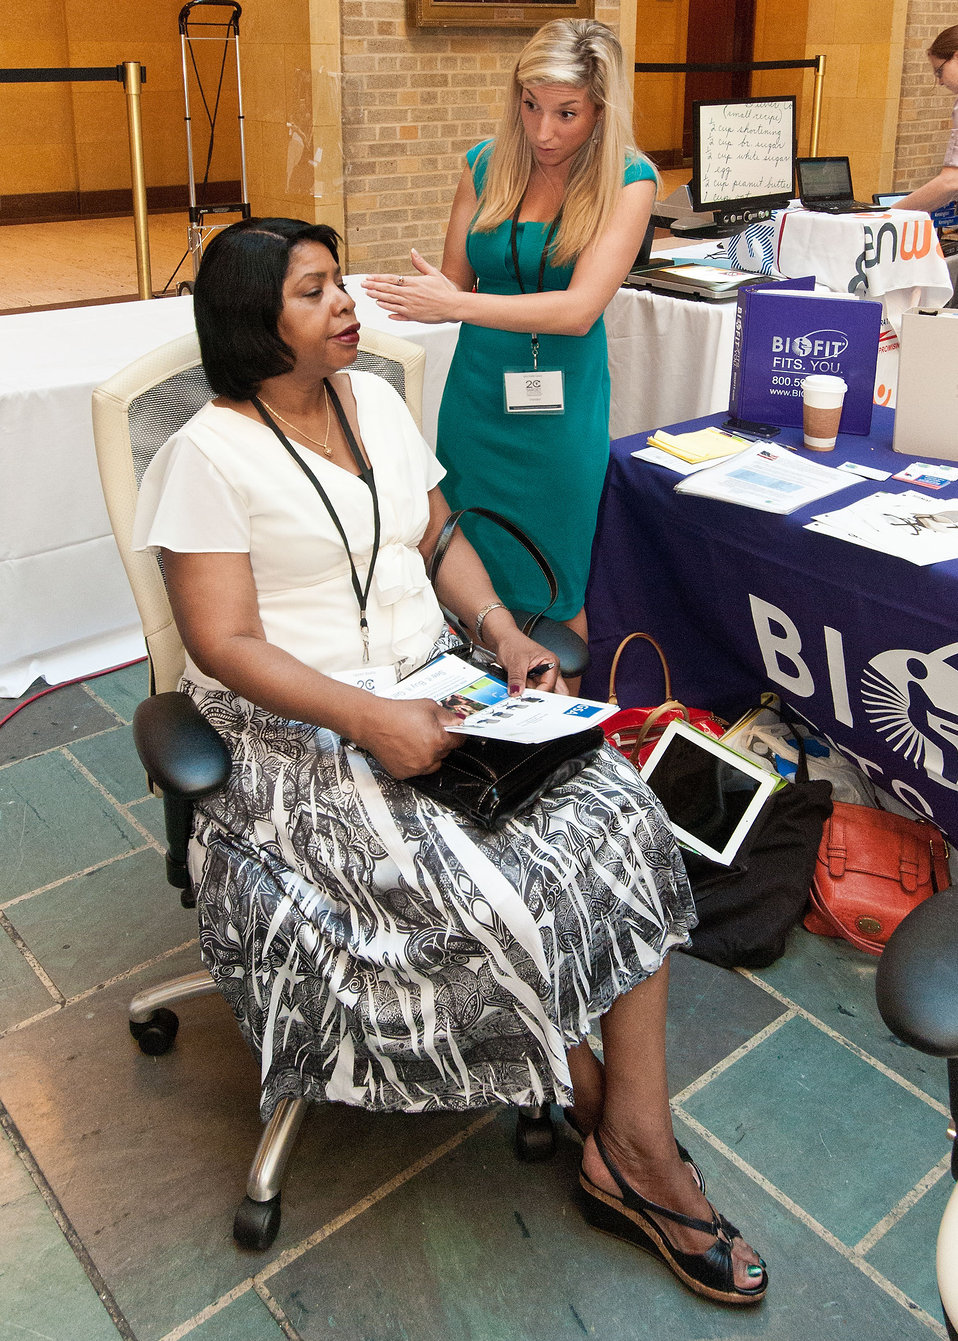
Zoom Incorporated representative Michele Levy (standing) demonstrates an ergonomic chair to Lauren Beatty (seated) at the U.S. Department of Agriculture (USDA) Departmental Management (DM) Target Center 20th Anniversary at USDA in Washington, D.C. on Thursday, Sept. 13, 2012 The USDA Target Center has provides Assistive Technology to employees with disabilities. The Center has assisted thousands of individuals with disabilities to further contribute to the mission of USDA.